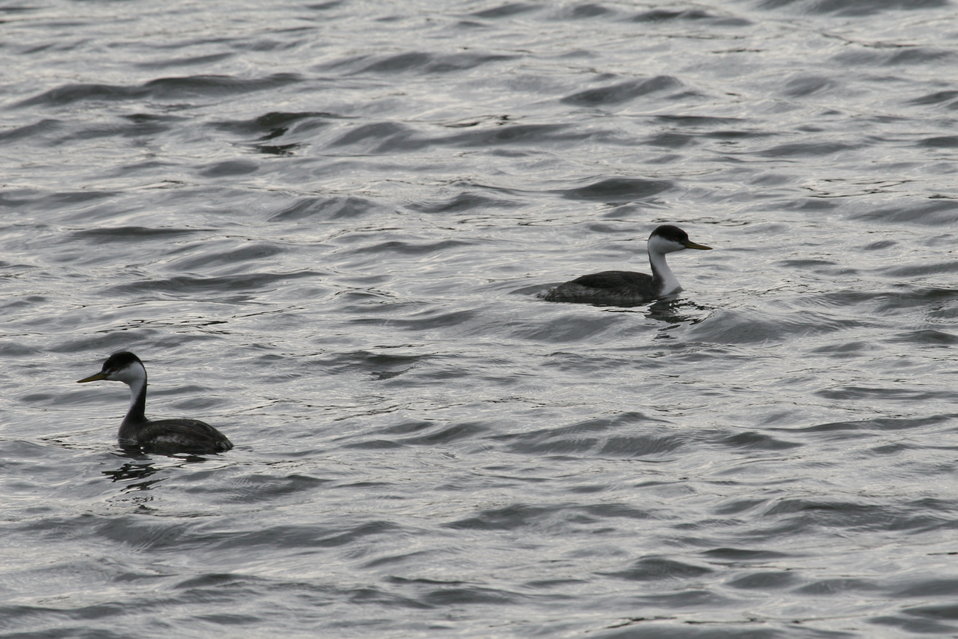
Fall on the Refuge - Young Western Grebes

Together, the male and female Western Grebe build a floating nest made of heaps of plant material anchored to emergent vegetation in a shallow area of a marsh. The female lays three to four eggs, and both parents incubate. Once hatched, the young leave the nest almost immediately and ride on the backs of the parents. Both parents feed the young. Young are plain gray and white, not striped like the young of other grebes.